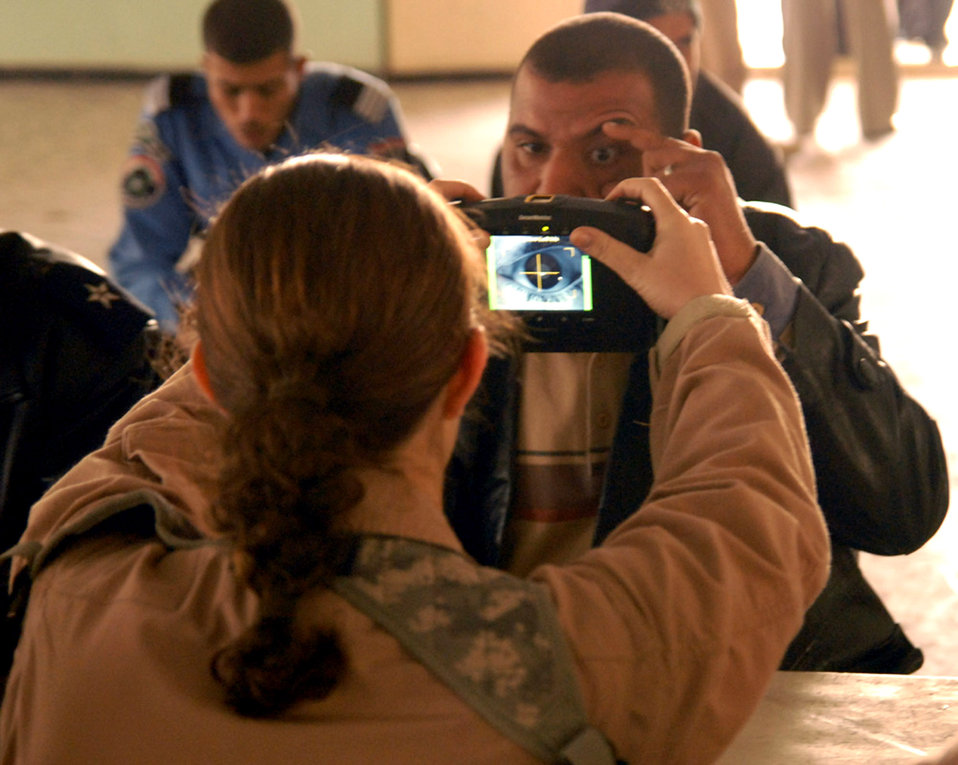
Coalition Forces assist in Iraqi police pay day

Airman 1st Class Amanda Houser takes an eye iris scan on an Iraqi policeman during the Hy al Amil Iraqi Police and Patrol Station's monthly pay day activities Jan. 30 the at Joint Security Station Black Lion in Baghdad, Iraq. The pay day activities included: a security search, being identified by an eye iris scan, showing the proper identification, and verifying the IP had their assigned weapons. Verifications were made with the help of U.S. expeditionary security forces. Airman Houser is a native of Hortonville, Wis., and a member of Det. 3 of the 732nd Expeditionary Security Forces Squadron, 716th Military Police Battalion, 18th Military Police Brigade.